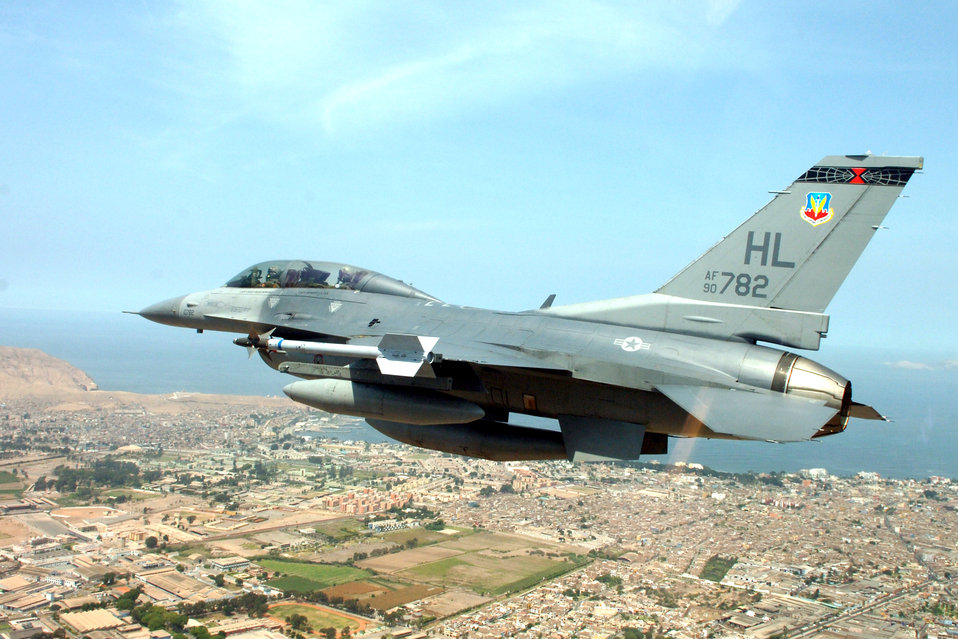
Airmen work alongside Peruvian military during joint exercise

An F-16 Fighting Falcon Utah flies over Lima, Peru, on its way to the city for a joint air show with the Peruvian Air Force. The Peruvian air show will be the first of the year for aircraft from the 12th Air Force and Air Forces Southern. The F-16 is from the 34th Fighter Squadron at Hill Air Force Base, Utah.